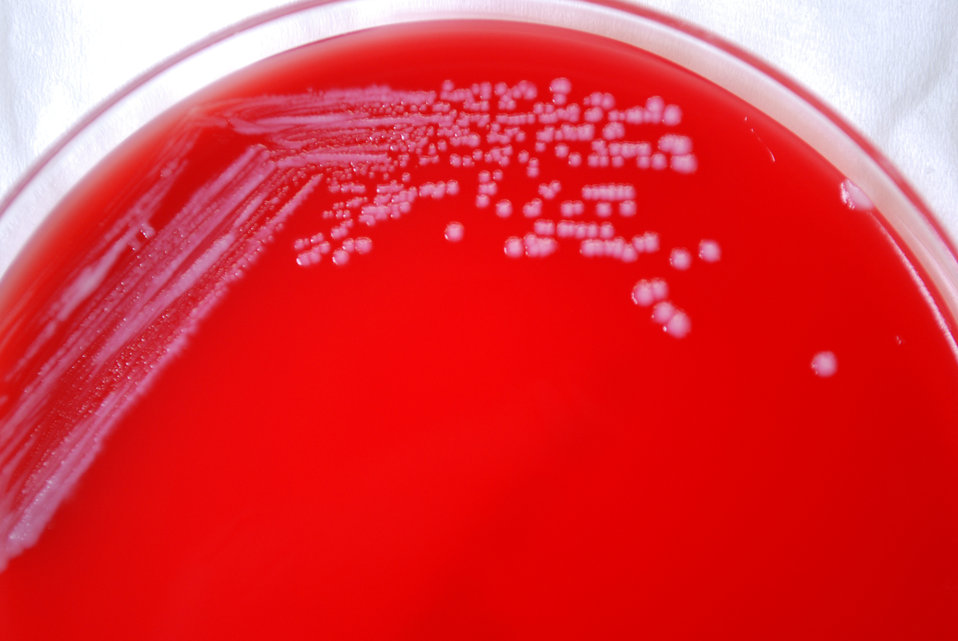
As a closer view of PHIL 12265, this photograph depicts the colonial morphology displayed by Gram-negative Yersinia pestis bacteria, which was grown on a medium of sheep's blood agar (SBA), for a 72 hour time period, at room temperature. Y. pestis is the bacterium responsible for causing the infectious disease known as plague.